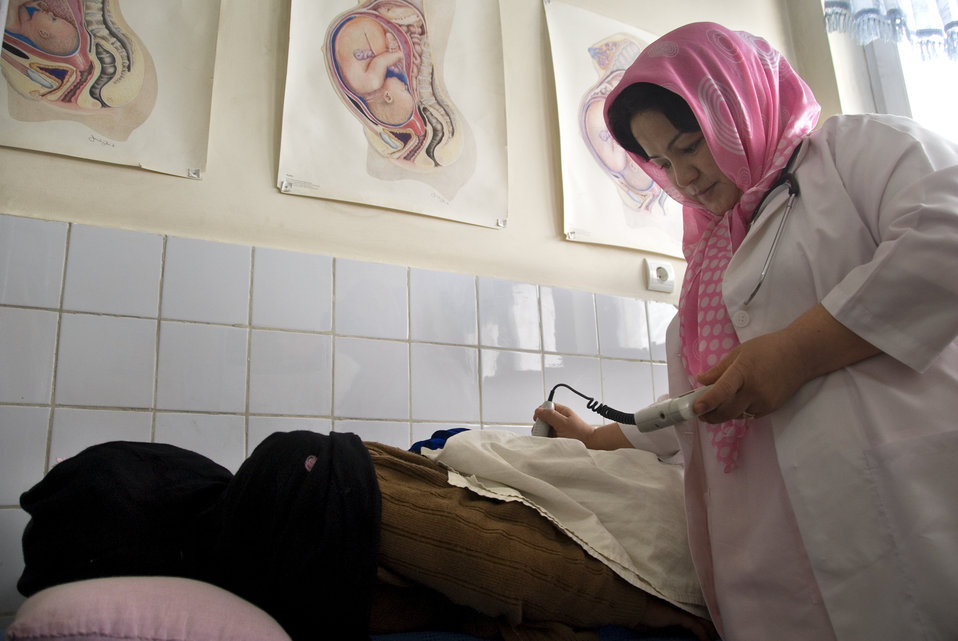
Midwifery

Sadeqa Khavari graduated from a midwifery school in Bamyan province in 2007. She then worked for two years as a community midwife, before moving to Kabul to work in one of Kabul’s private hospitals that employs several graduates of USAID-supported midwifery schools. USAID has trained more than 1,800 midwives, over half of all midwives trained in the past 10 years.